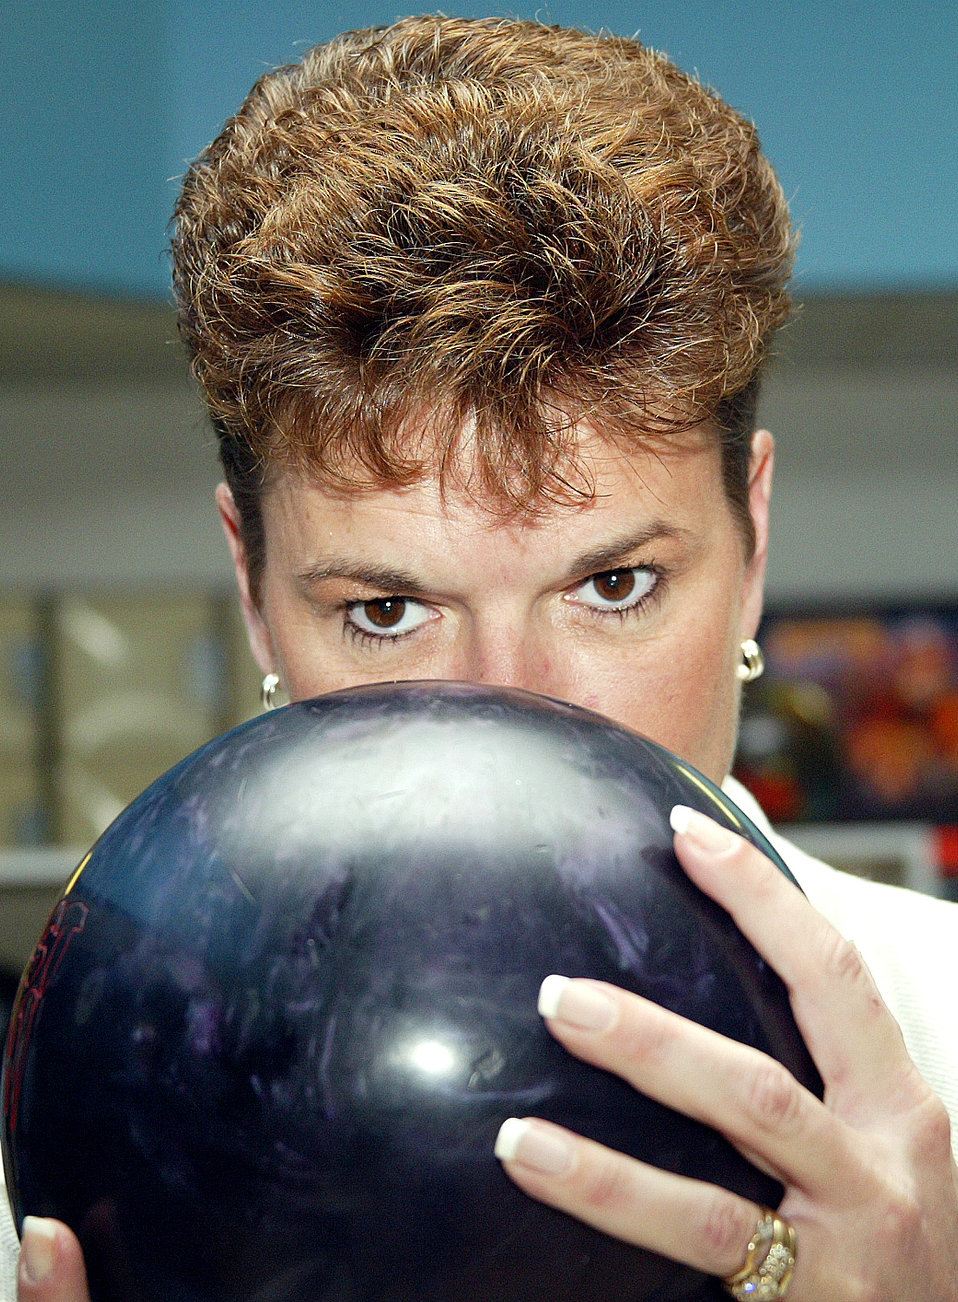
Five straight win

LACKLAND AIR FORCE BASE, Texas -- Master Sgt. Lori Trainor from Randolph Air Force Base, Texas, peers over her ball during the Armed Forces Bowling Championship here. Airmen swept all the gold medals, claiming their fifth consecutive interservice team title and 15th overall since 1976.